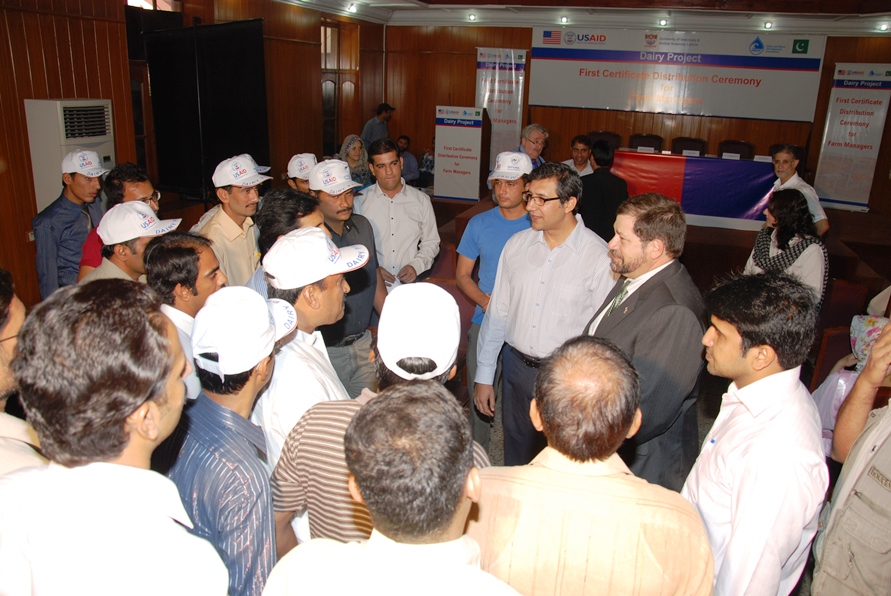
1 - USAID Mission Director Punjab Mr. Jeffrey Bakken interacting with the Dairy Project-trained dairy farm managers on October 4, 2012.